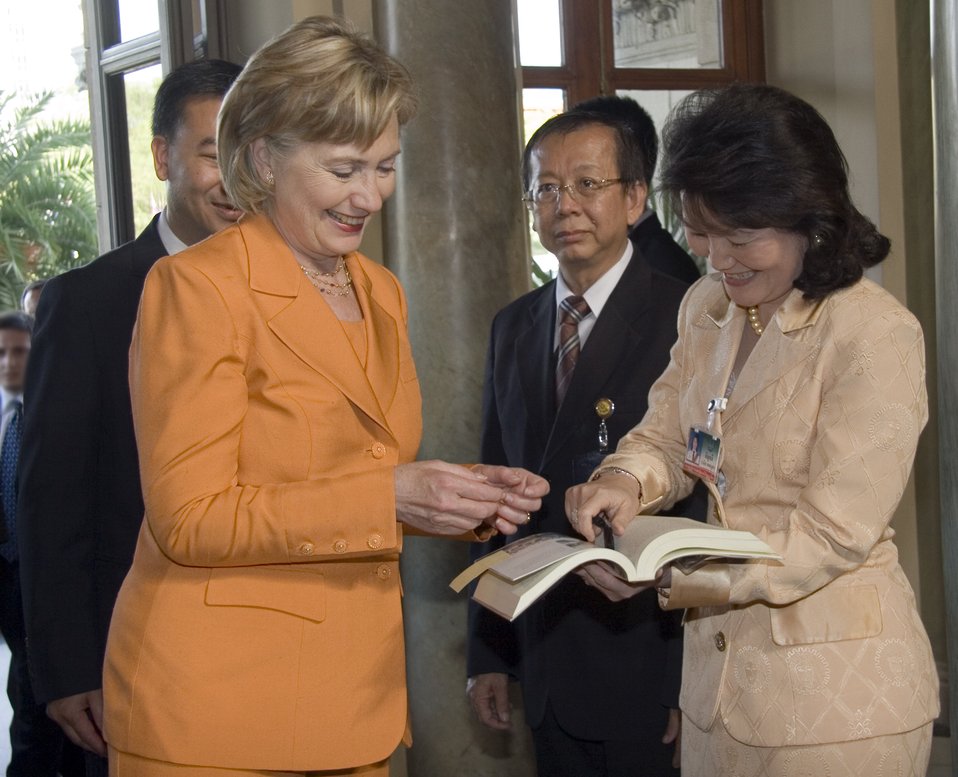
Secretary Clinton at Government House in Bangkok

US Secretary of State Hillary Clinton autographs a book for Anchalee Vanich, Deputy Secretary General to the Prime Minister as she enters the Government House in Bangkok, Thailand on Tuesday, July 21, 2009.

U.S. Secretary of State Hillary Rodham Clinton